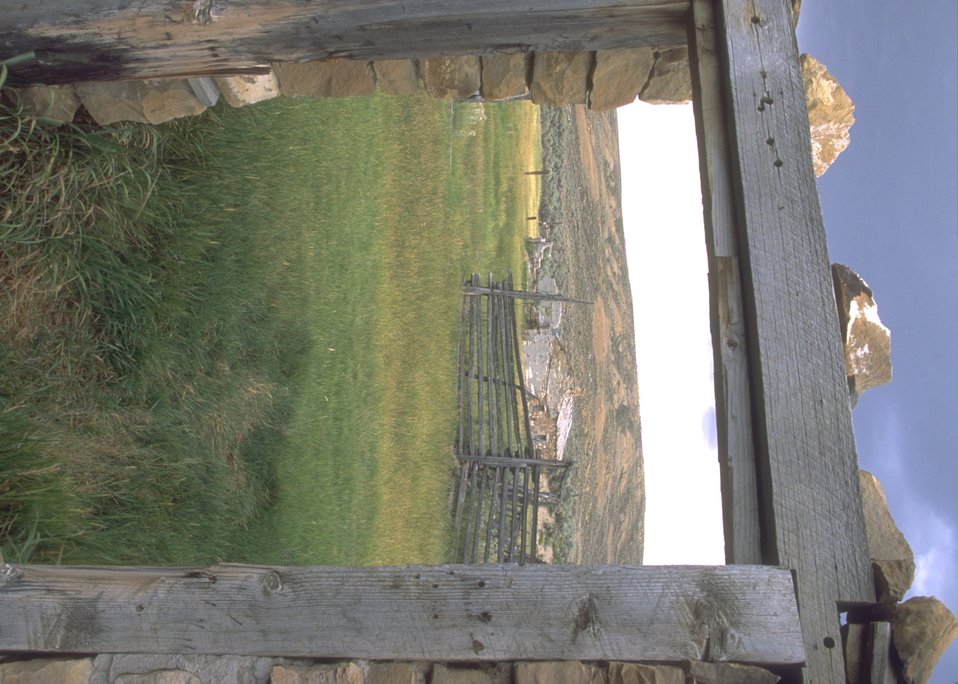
Historic Crookston Ranch near OHV Sand Dunes Area, Rock Springs Field Office.